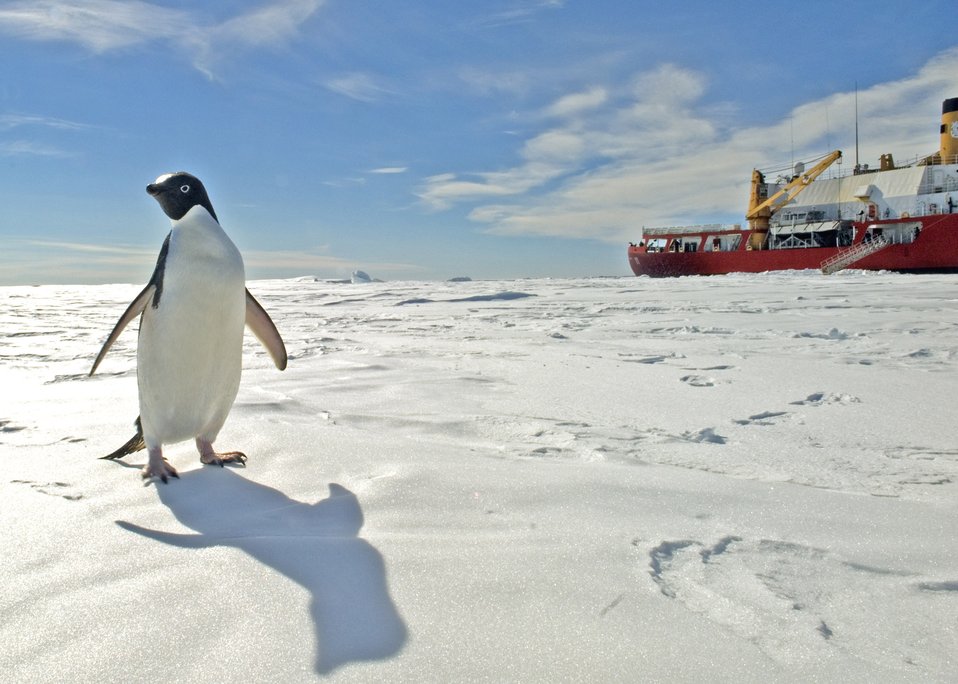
Joint effort key to success in Deep Freeze

A curious penguin comes by to investigate the Coast Guard Cutter Polar Sea as the ship takes a break from its ice-breaking duties. The Polar Sea is in Antarctica as part of the Air Force-led Joint Task Force Support Forces Antarctica, Operation Deep Freeze 2007, clearing a navigable channel for supply ships to get needed equipment and goods to scientists working in McMurdo, Antarctica.